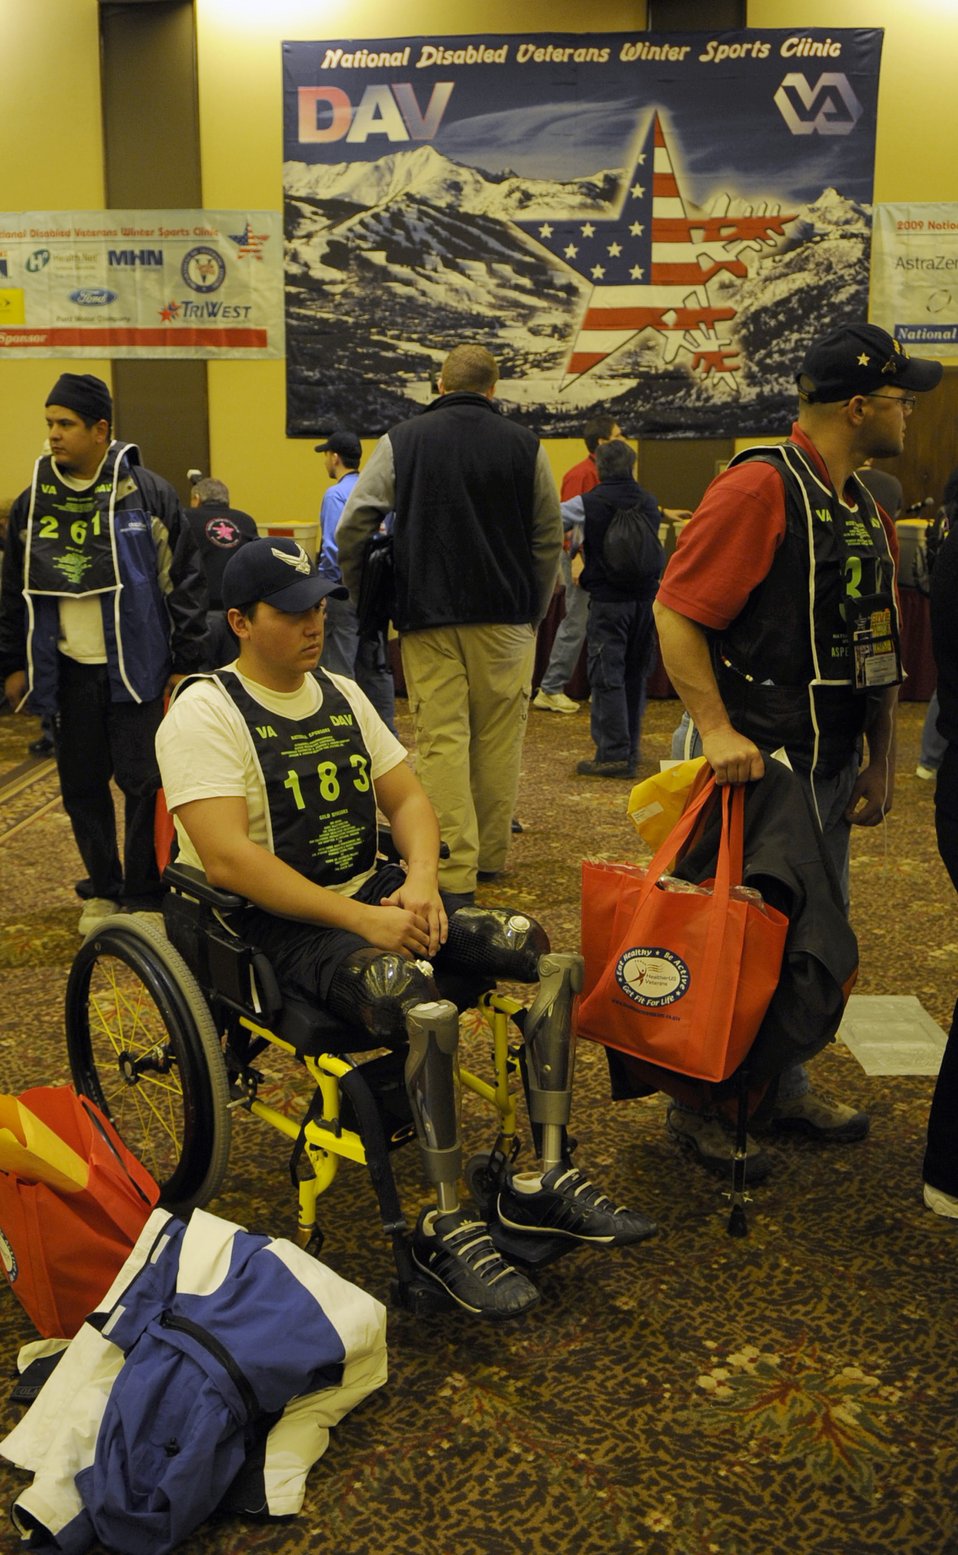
Winter rehabilitation clinic shows veterans potential

Senior Airman Kevin Krogh waits patiently inside The Silver Tree Hotel March 29 during registration for the 23rd National Disabled American Veterans Winter Sports Clinic in Snowmass Village, Colo. Airman Krogh lost both legs in a major car accident in 2007 and this will be his first year attending the sports clinic. Airman Krogh is assigned to Fort Sam Houston in San Antonio, Texas.